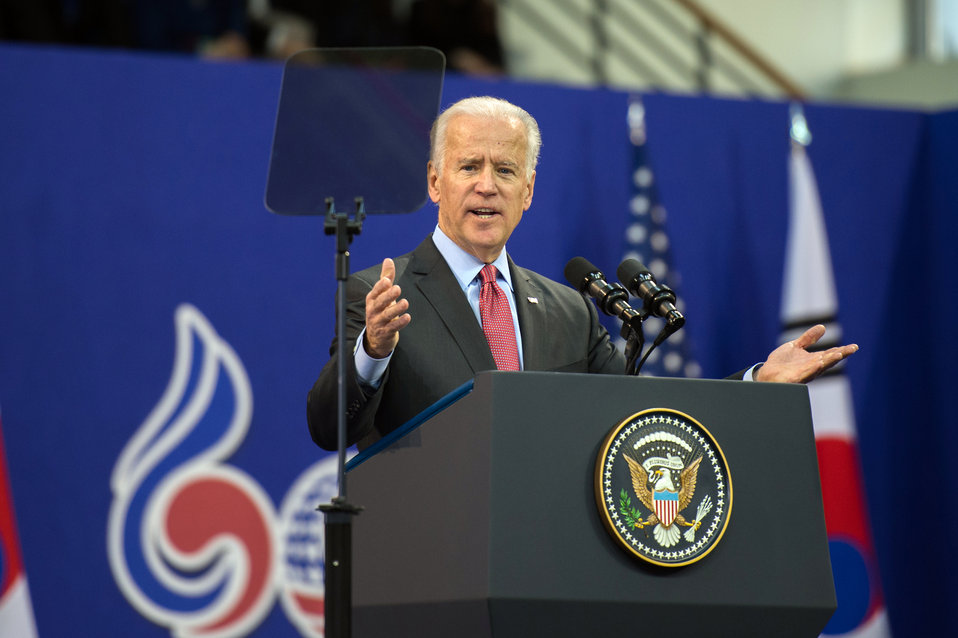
Vice President Biden Delivers Remarks in Seoul

Vice President Joseph Biden delivers a speech at Yonsei University in Seoul, South Korea, on December 6, 2013.